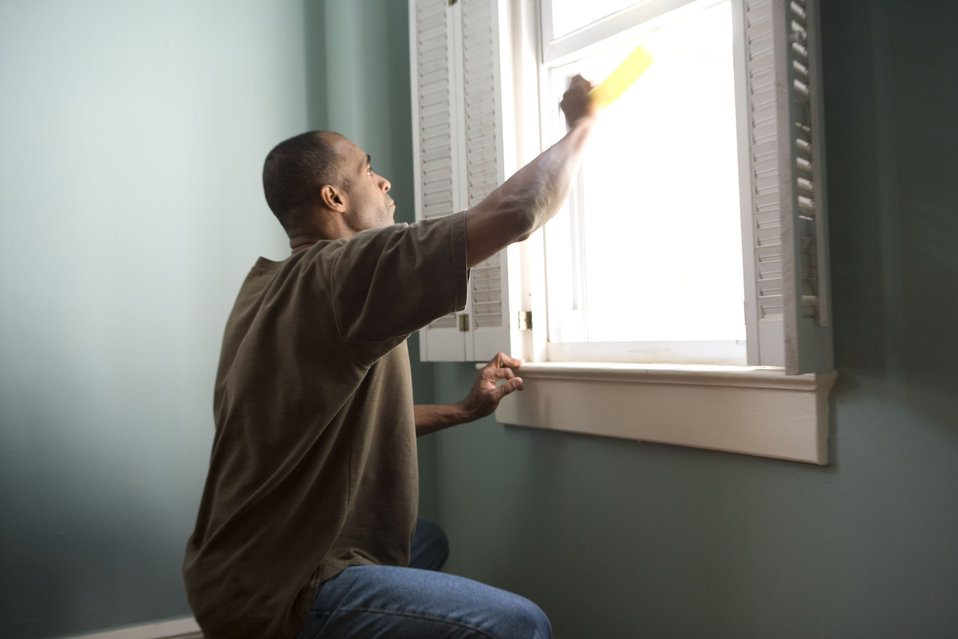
When renovating a home, you should use a damp sponge or cloth to clean dust collected on a window sill, as the dust may contain asbestos or lead-based paint. Home maintenance is an ongoing process for any homeowner, and here we see an African-American man as he was preparing a window in his home for a general cleaning.